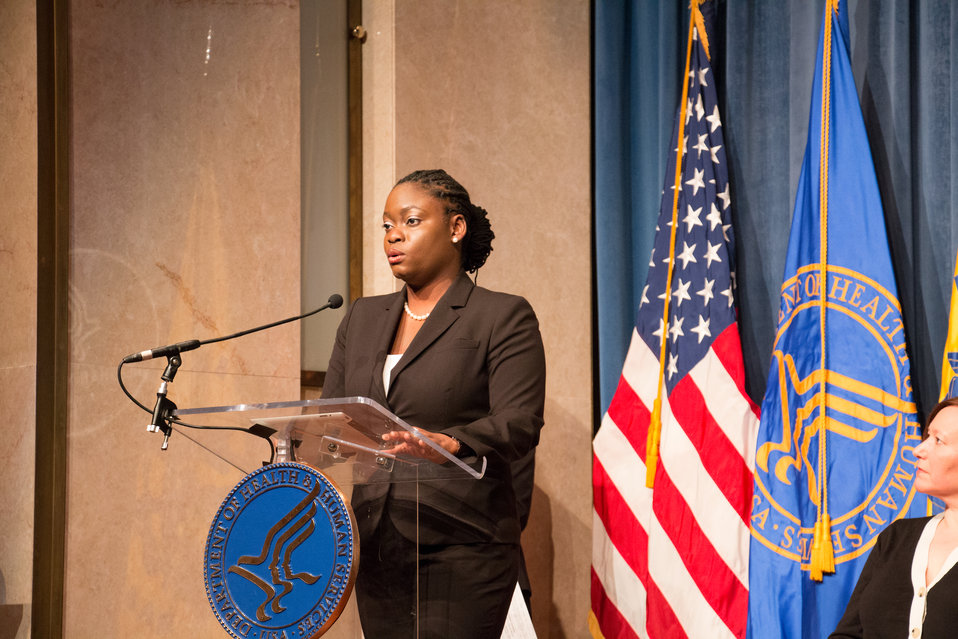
VHAP Launch (271 of 511)